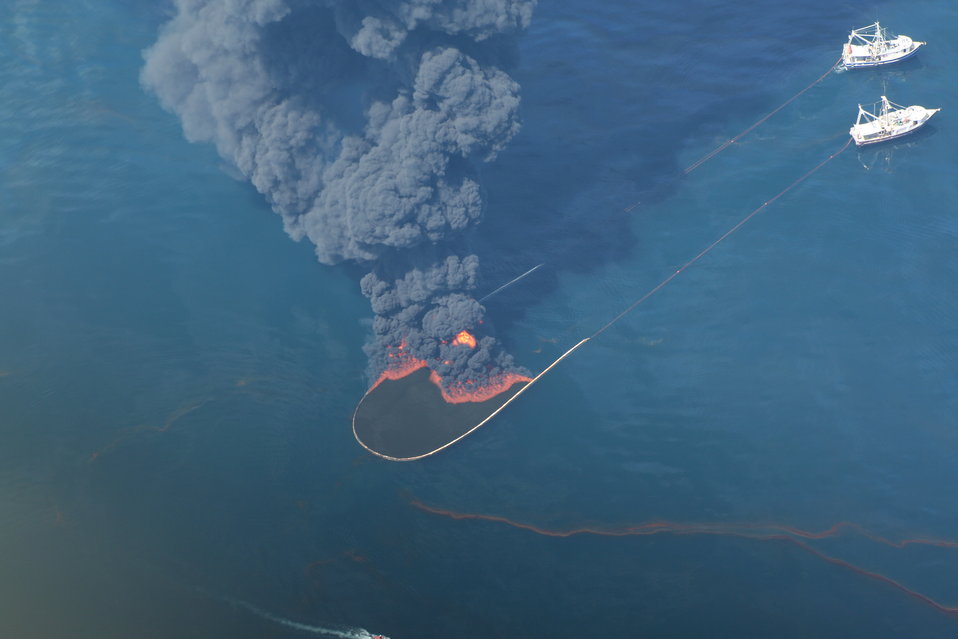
May 6 Open Water Oil Burn

May 6, 2010 - Open-water oil burn

Photo taken from U.S. EPA's Airborne Spectralphotometric Environmental Collection Technology (ASPECT) aircraft.